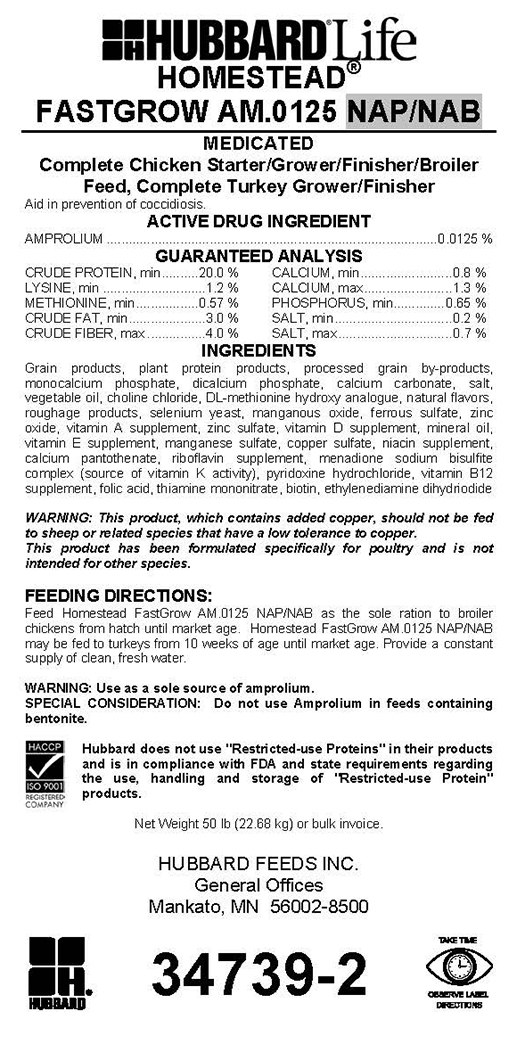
RECALLED – Poultry feed

July 2, 2013 – Product Recall – Hubbard Feeds Inc. Announces Voluntary Recall in Indiana and Michigan Due to Potentially Elevated Calcium and Phosphorus in Medicated Poultry Feed.